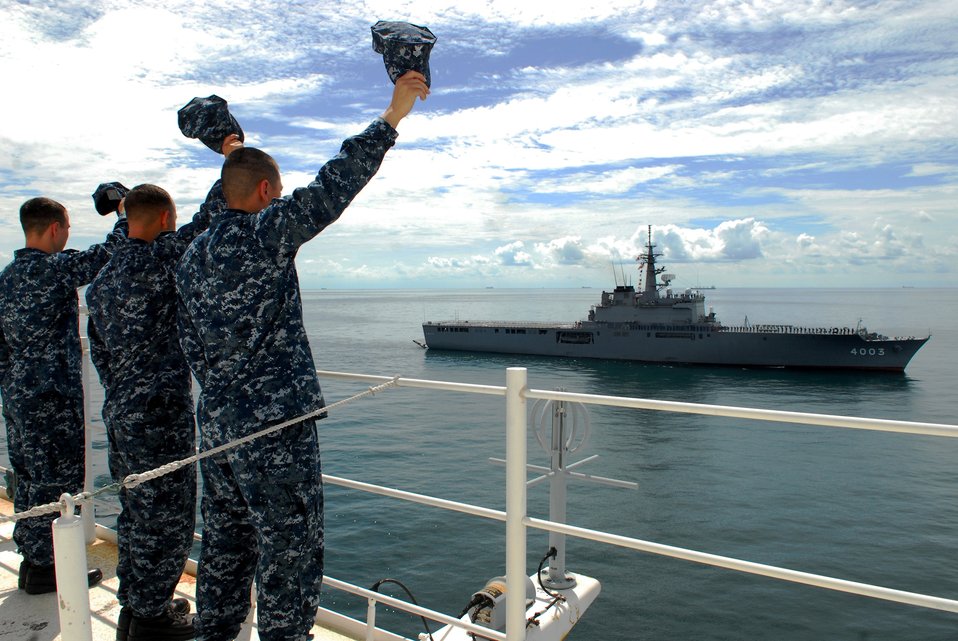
Sailors Aboard the USNS Mercy Wave at the Japan Maritime Self Defense Force Ship JDS Kunisaki

Sailors aboard the Military Sealift Command hospital ship USNS Mercy (T-AH 19) wave at the Japan Maritime Self Defense Force ship JDS Kunisaki (LST 4003) during a Pass and Review demonstration with Kunisaki on July 5, 2010. Mercy is transiting the South China Sea en route to Indonesia in support of Pacific Partnership 2010, the fifth in a series of annual U.S. Pacific Fleet humanitarian and civic assistance endeavors to strengthen regional partnerships.